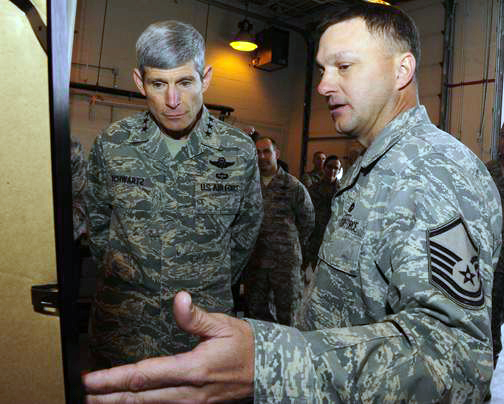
Holloman visit by chief of staff highlights contributions of America's Airmen

Air Force Chief of Staff Gen. Norton Schwartz is briefed on the remote piloted aircraft facility plan by Master Sgt. Ernest Penton Jan. 27, 27, 2010, at Holloman Air Force Base, N.M. General Schwartz visited Holloman AFB to see Airmen and operations firsthand. Sergeant Penton is assigned to the 49th Aircraft Maintenance Squadron.